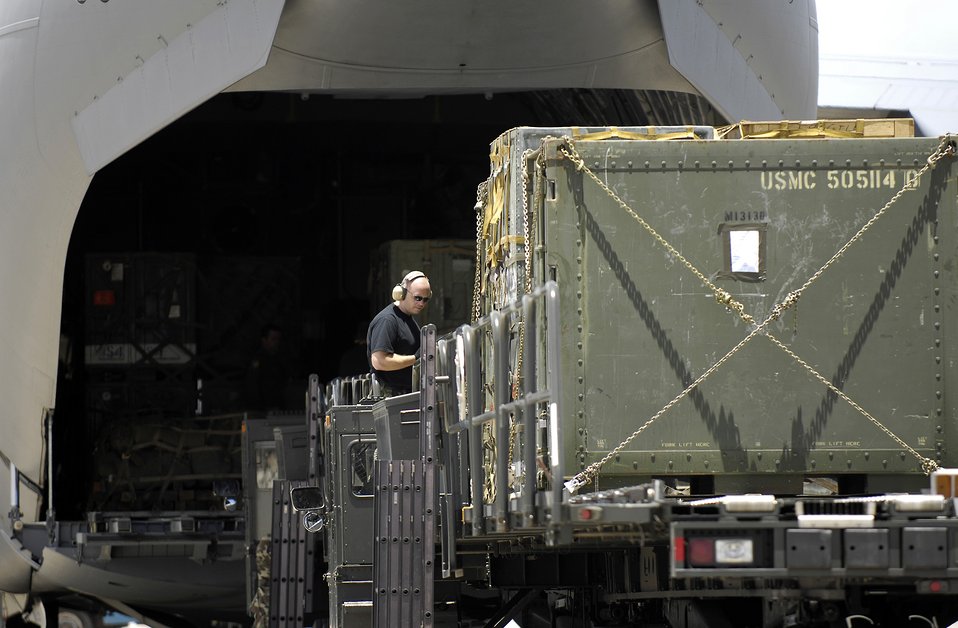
Wright-Patterson Airmen take over Hickam air operations

An air transportation specialist helps unload a C-17 Globemaster III July 2 at Hickam Air Force Base, Hawaii. Reservists from the 87th Aerial Port Squadron from Wright-Patterson AFB, Ohio, are conducting their two-week duty with the 735th Air Mobility Squadron.